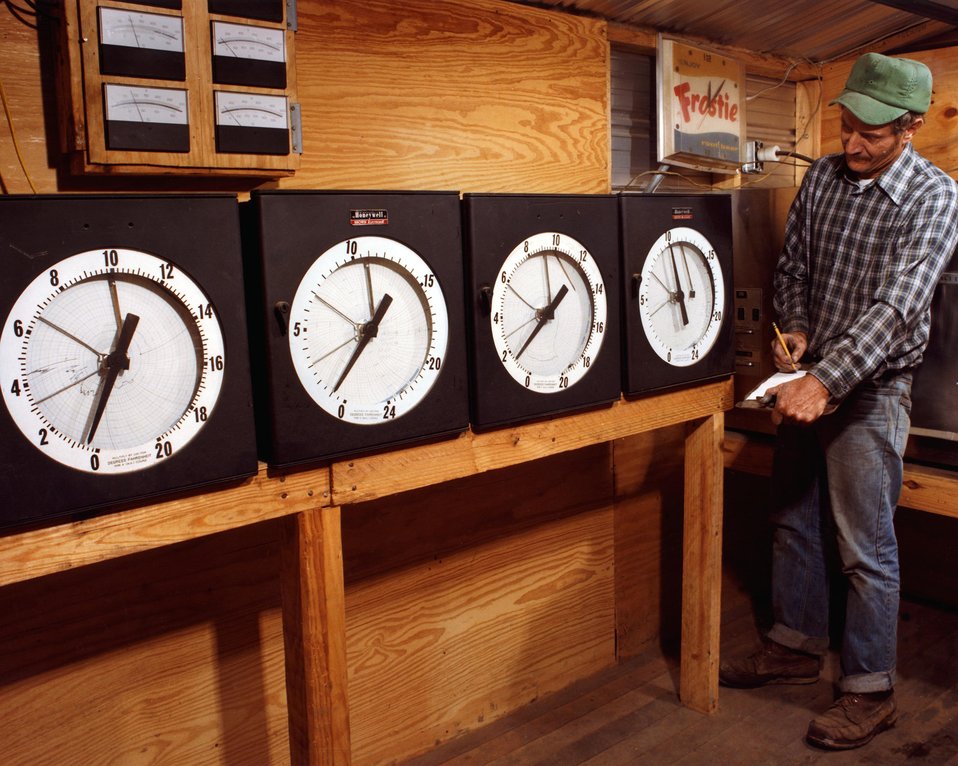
WORKER MONITORS INSTRUMENTS THAT RECORD VARIOUS TEMPERATURES USED IN PROCESS.

LOCALLY AVAILABLE BIOMASS, IN THIS CASE SAWDUST AND WOOD CHIPS FROM A PALLET MANUFACTURING PROCESS, IS PROCESSED TO PRODUCE MORE USABLE FORMS OF BIOMASS. THE PROCESS AT THIS PLANT PRODUCES CHARCOAL FOR MARKETING AND STEAM FOR A NEIGHBORING RICE PROCESSING PLANT.